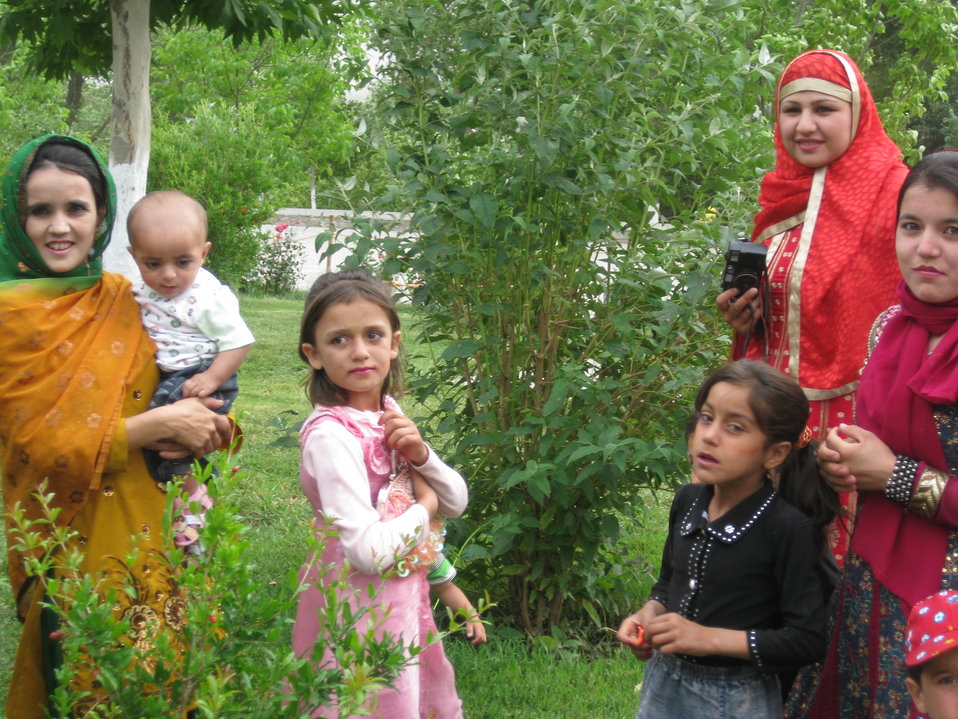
Afghan Youth Voices 094